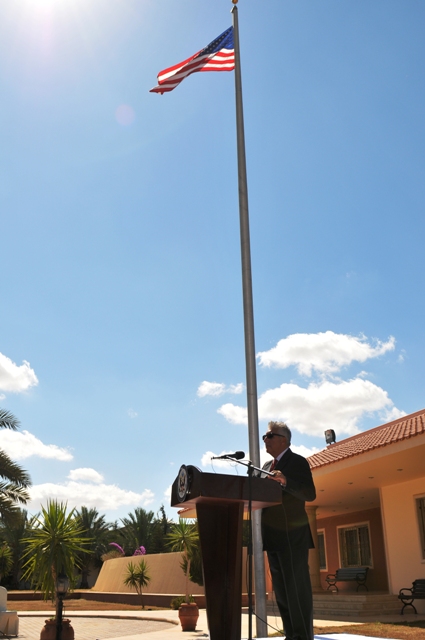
Ambassador Cretz Stands at the Podium

U.S. Ambassador to Libya Gene A. Cretz stands at the podium during a flag raising ceremony for the U.S. Embassy in Tripoli, Libya, on September 22, 2011.